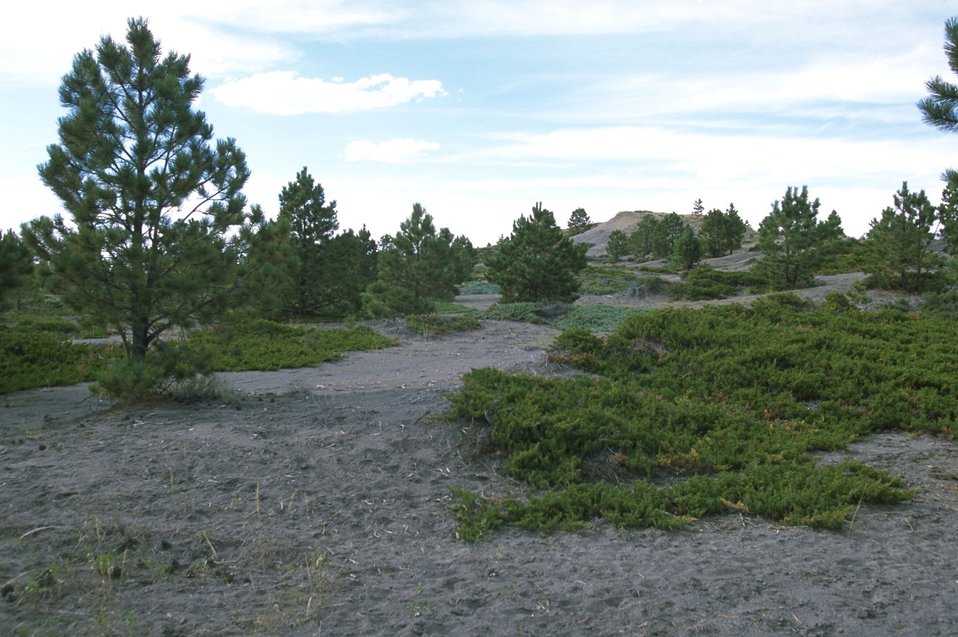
Acid Shale Area of Critical Environmental Concern (ACEC)